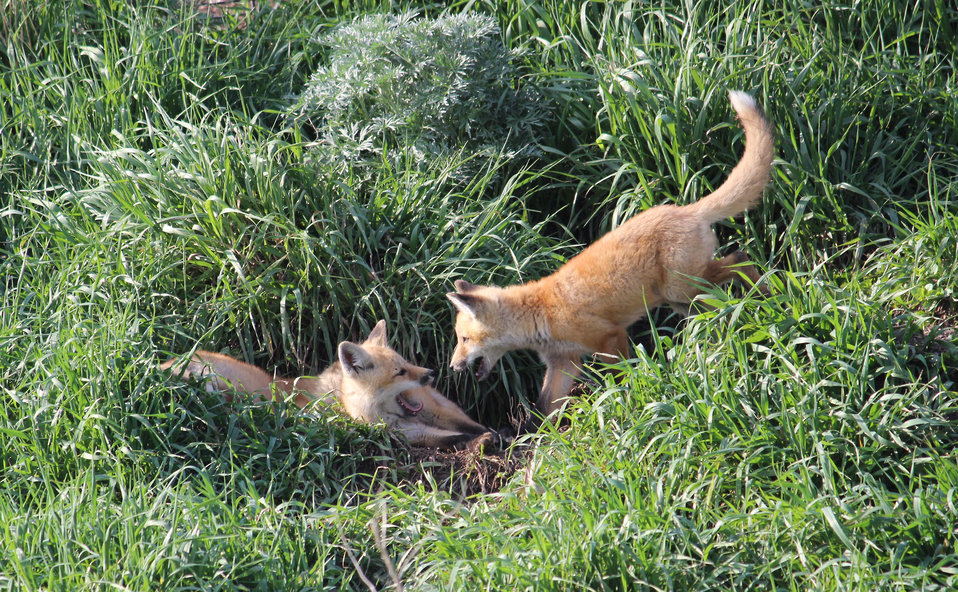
Red Fox Kits at Play

There are four kits at this den across the road from the Schumacher Waterfowl Production Area in McIntosh County, ND. Red fox are adept predators of birds and small mammals. For many years, fox numbers have been down in the area due to mange and the high numbers of coyotes which kill foxes.